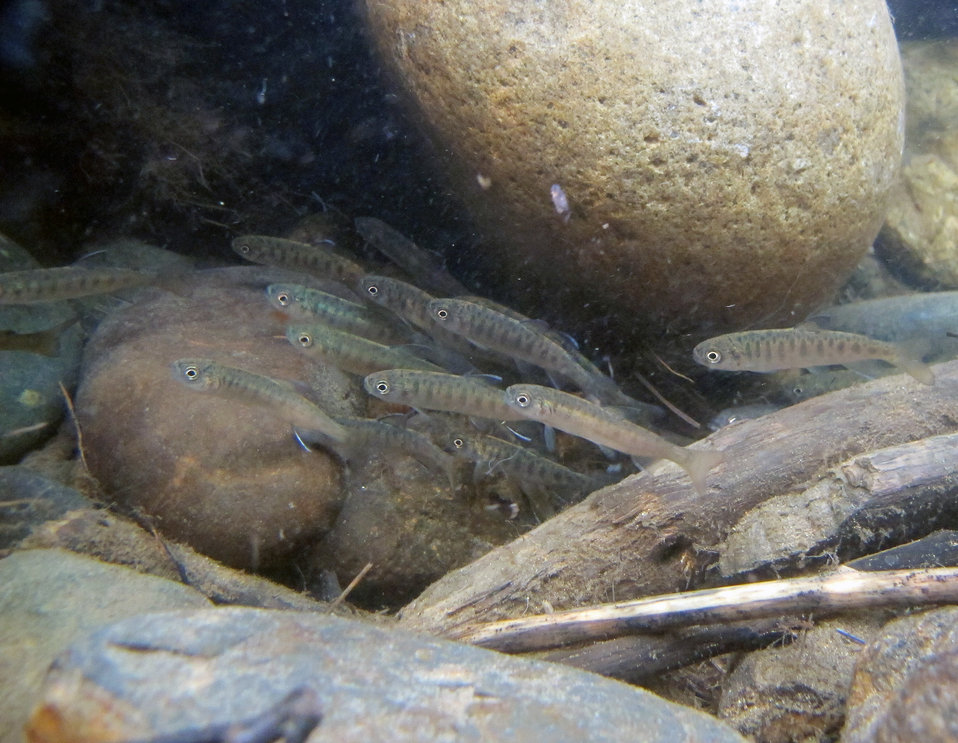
Caswell Lake Outlet juvenile salmonids